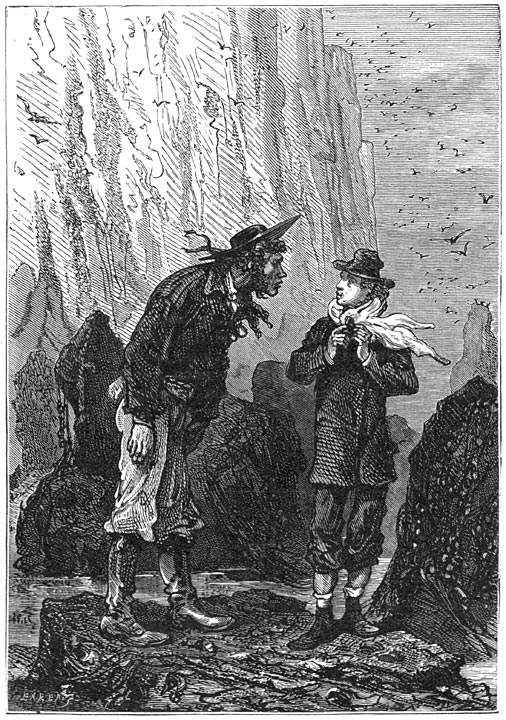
An illustration from Jules Verne's novel 'The Mysterious Island' (1873-74) drawn by Jules Férat. Polski: Ilustracja powieści Juliusza Verne'a 'Tajemnicza wyspa' (tytuł przekładany także jako: Wyspa tajemnicza, 1873-74) autorstwa Julesa Férata. Français : Jules Verne: 'L’Île mystérieuse' (1873-74), dessins par Jules Férat. Orginal description from the book: Français : « Et cela se mange ? » demanda Pencroff.